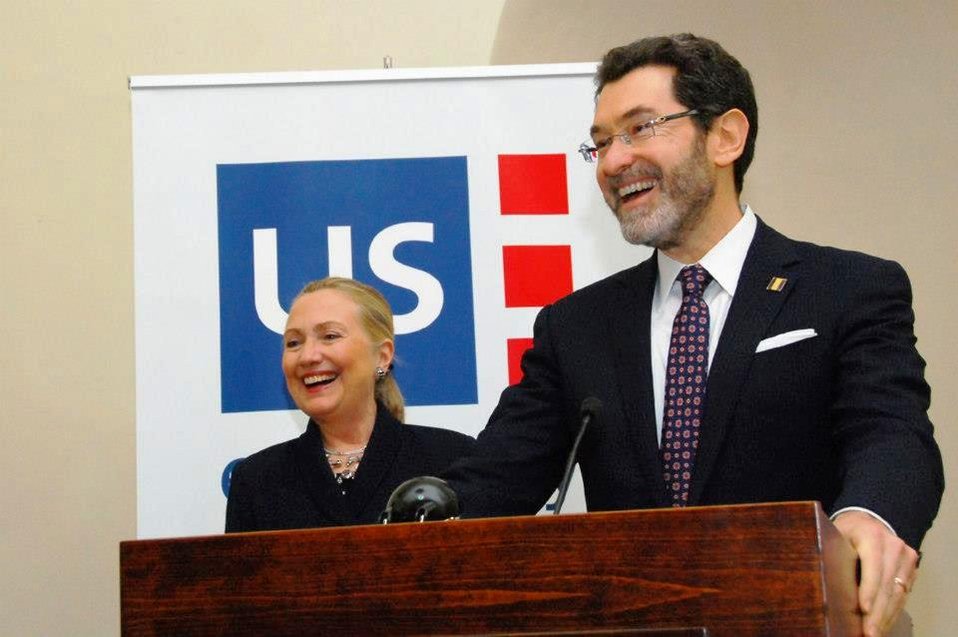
Secretary Clinton Is Introduced By Ambassador Eisen

U.S. Ambassador to the Czech Republic Norman Eisen introduces U.S. Secretary of State Hillary Rodham Clinton to staff and families at the U.S. Embassy in Prague, Czech Republic, December 3, 2012.